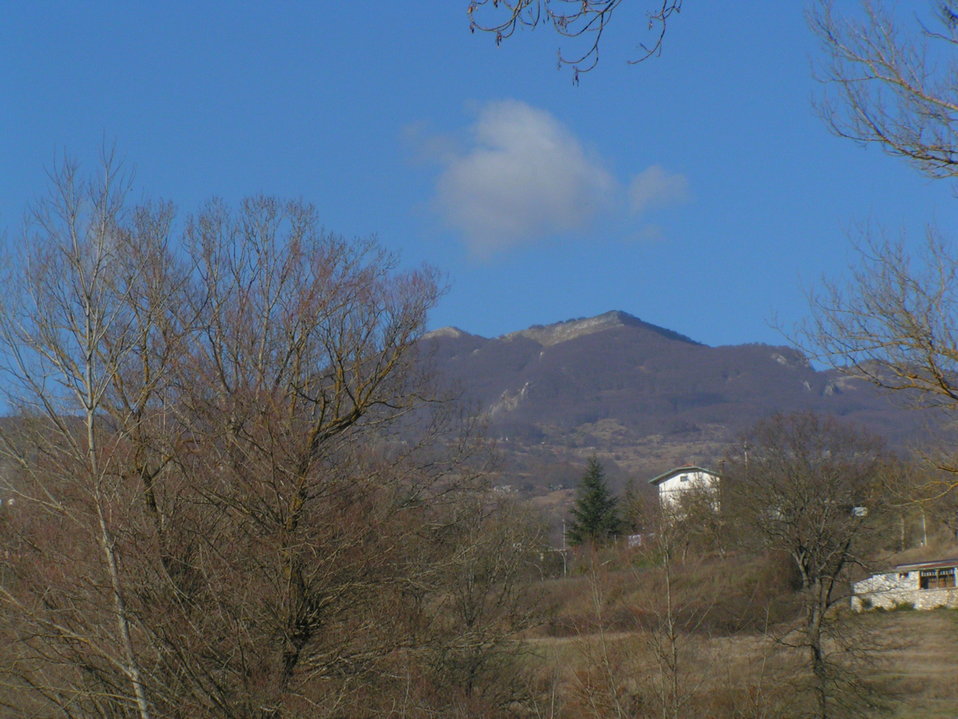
Italiano: Il monte Secine che sovrasta Ateleta: Foto personale. Licenza: